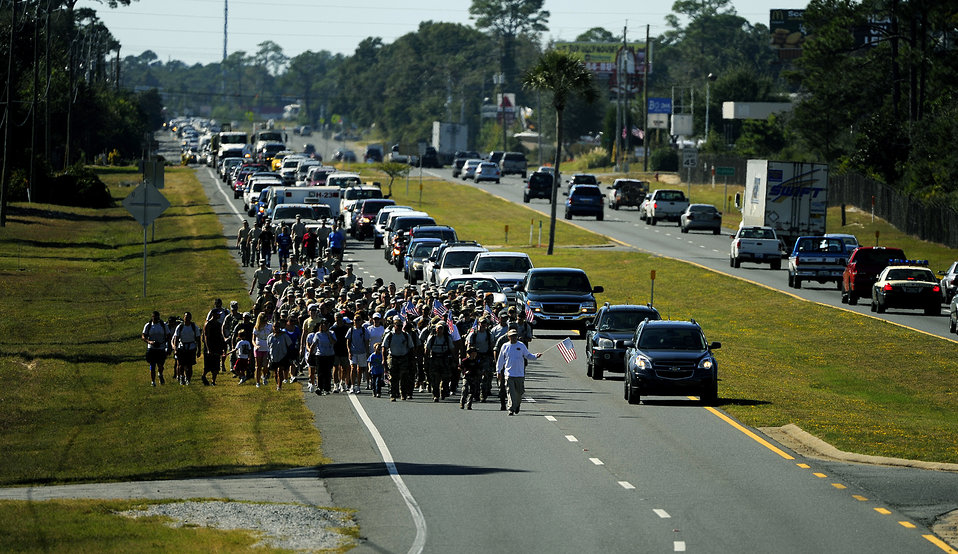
Special Tactics Memorial March

Surviving family members, a few wounded Airmen and members of the Air Force Special Operations Command, join fifteen Special Tactics Airmen Oct. 21, 2010, on the final stretch of an 860-mile memorial march from Lackland Air Force Base, Texas, to Hurlburt Field, Fla.